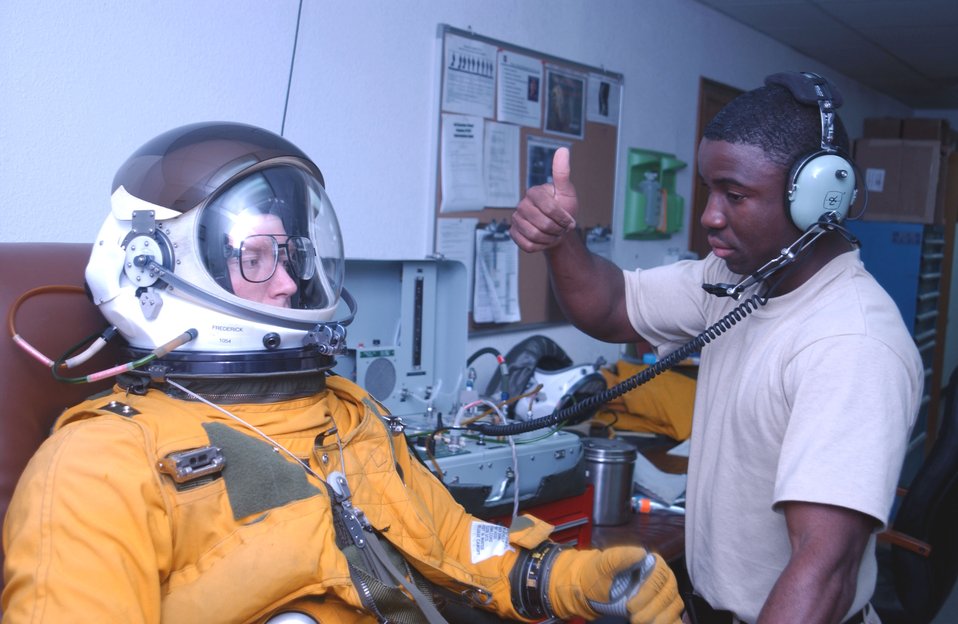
Flying high

Capt. Karl Frederick, a U-2 pilot assigned to the 99th Expeditionary Reconnaissance Squadron, gets a